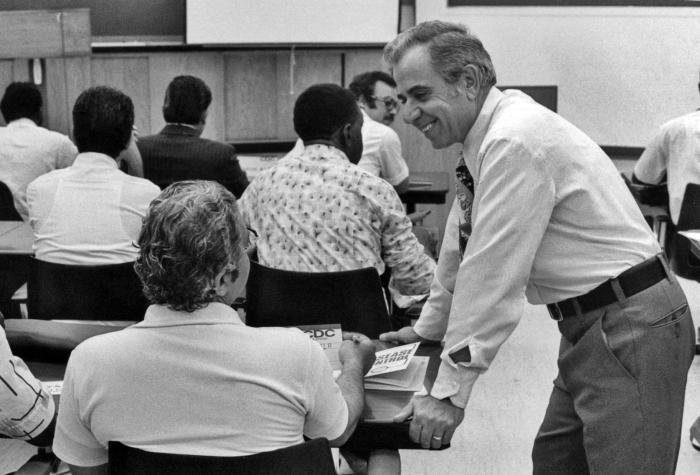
This photograph was taken during a Centers for Disease Control and Prevention (CDC) Surveillance Course for Pan-American Health Organization (PAHO) fellows; It was held in the CDC Atlanta offices from April 5, through December 10, 1971.